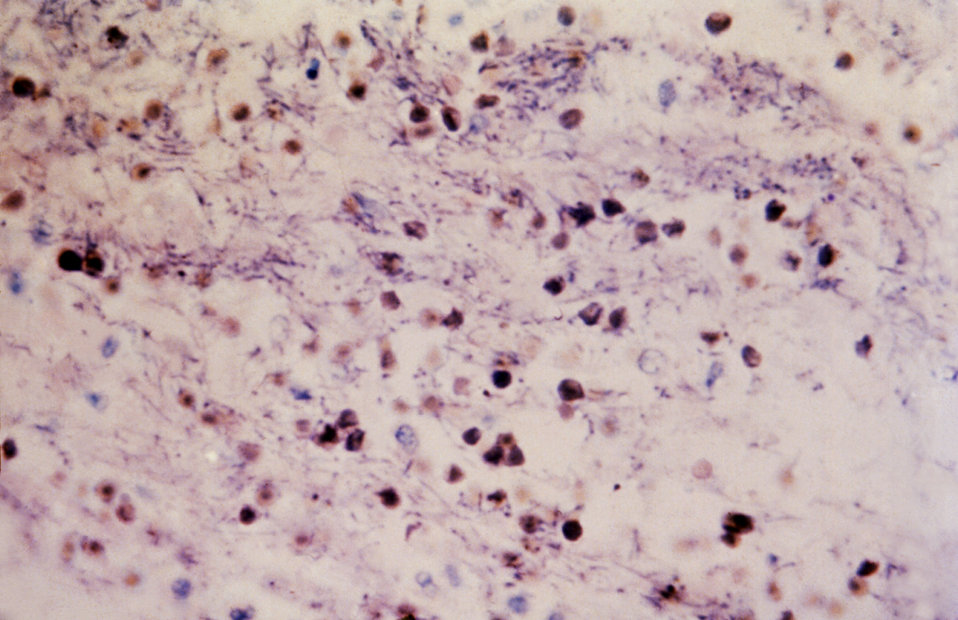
This micrograph reveals a meningeal infection due to Bacillus anthracis bacteria using an H&E stain.